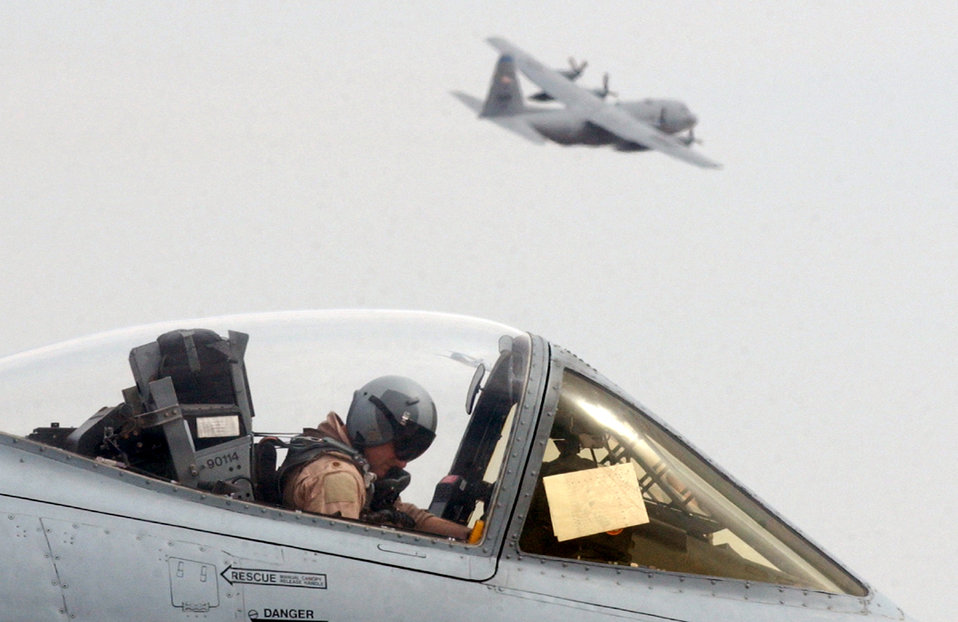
Preflight check

OPERATION IRAQI FREEDOM -- Maj John Hoff, a pilot with the 442nd Fighter Wing, performs preflight functions before the launch of his A-10 on a combat mission over Iraq. An Air Force C-130 takes off behind him. The 442nd is from Whiteman Air Force Base, Mo., and is deployed to Tallil Air Base in southern Iraq.